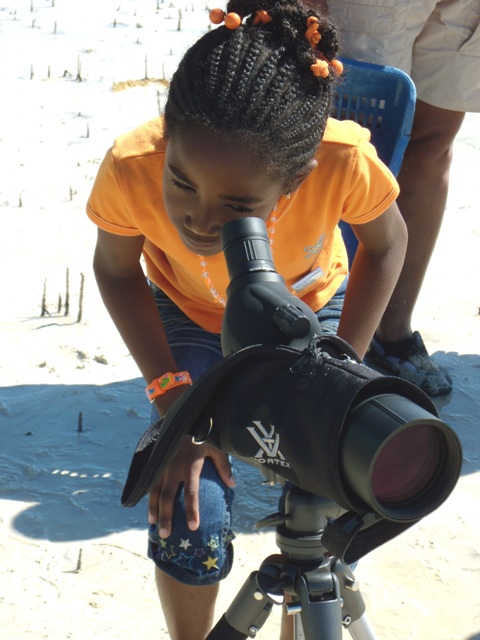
The Neugyen family looking at a piping plover flock

Working on New Providence Island.